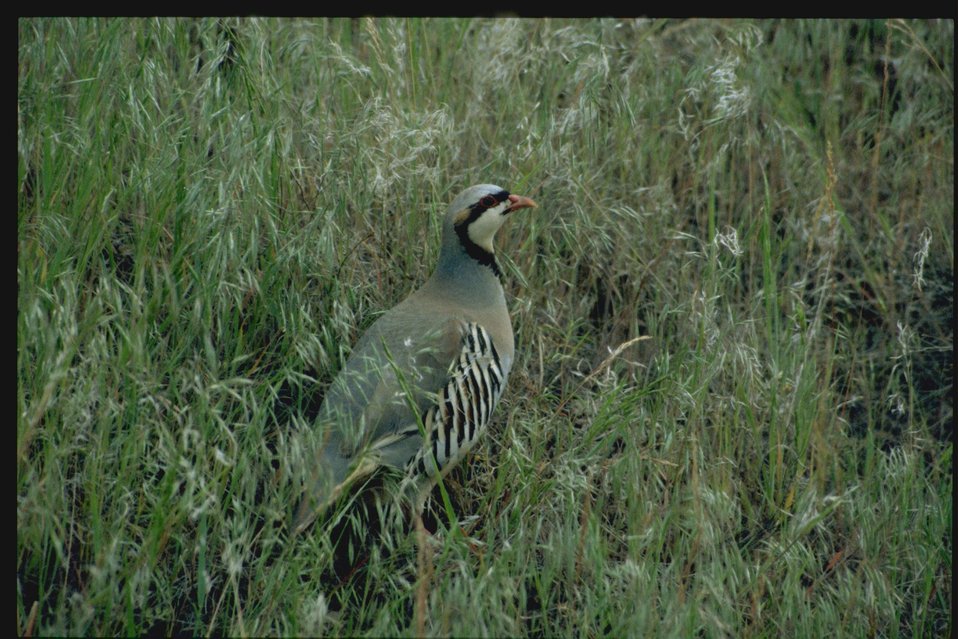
Medium shot of chukar (Alectoris chukar).